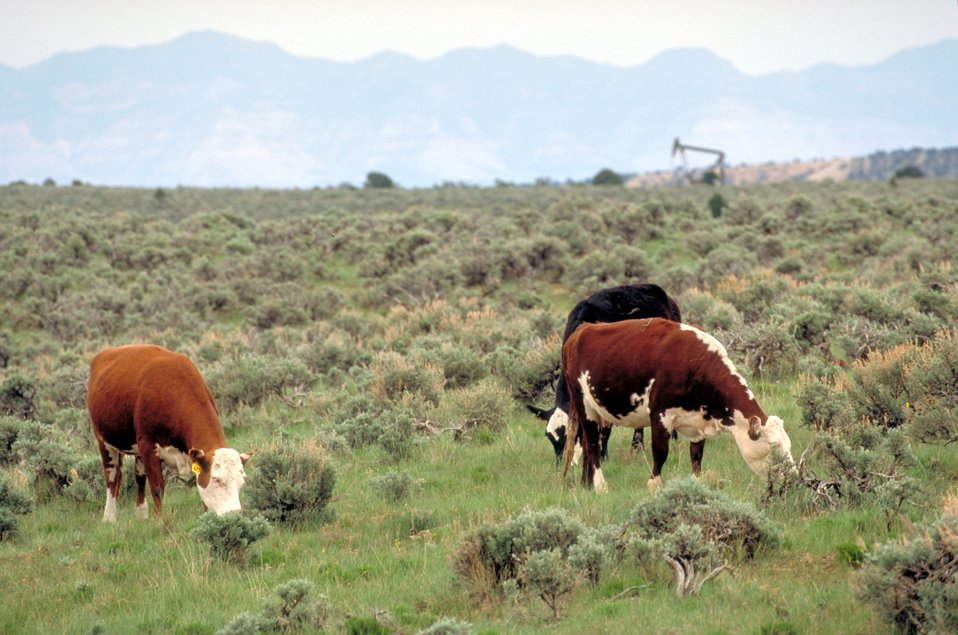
Livestock grazing on BLM lands near Price, Utah.